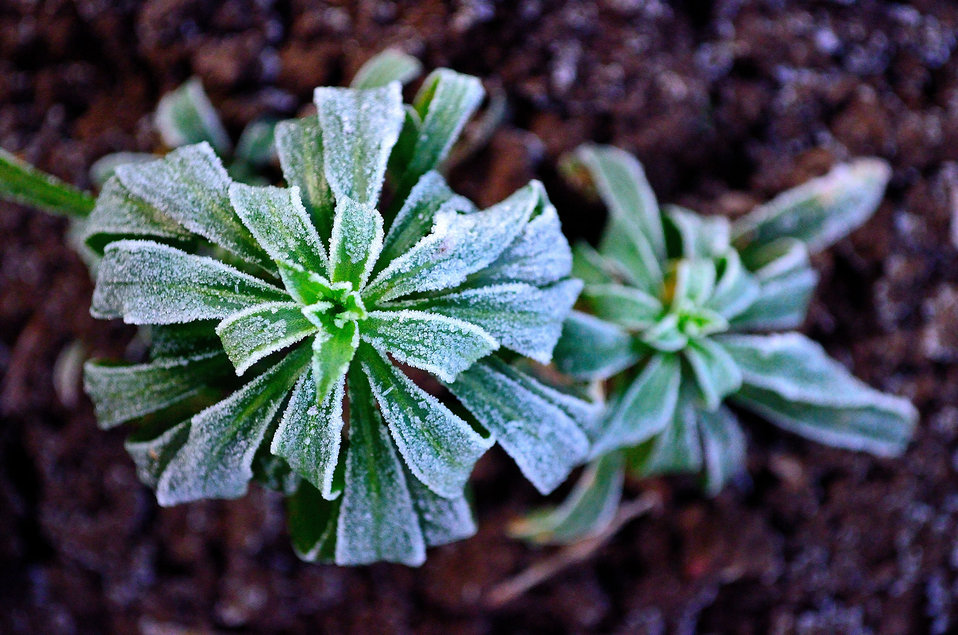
Winter frost on plants.